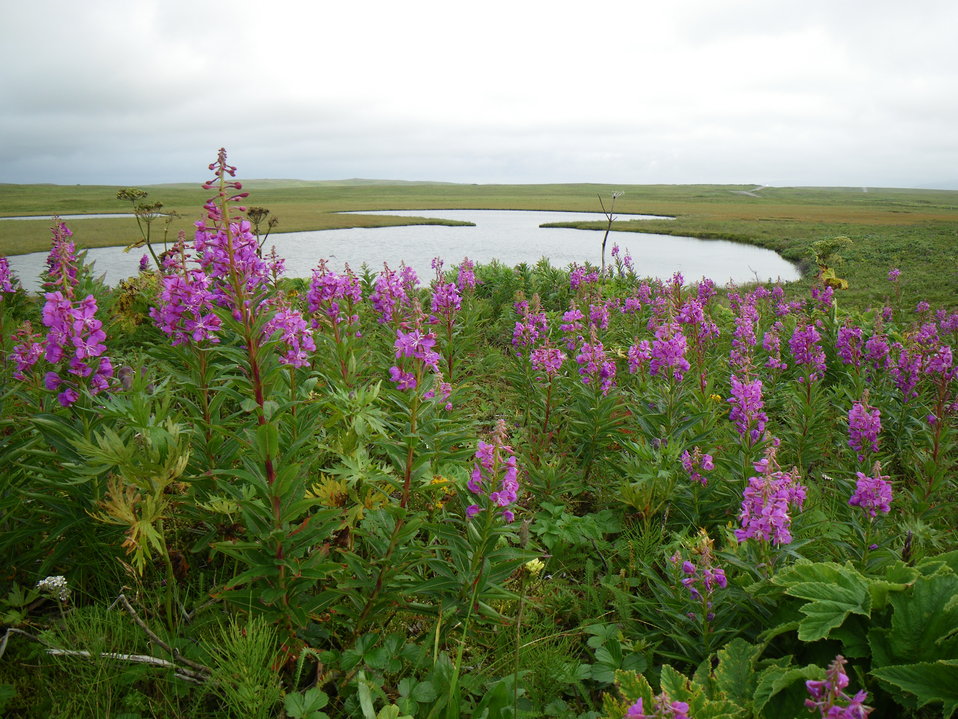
Fireweed

Izembek National Wildlife Refuge